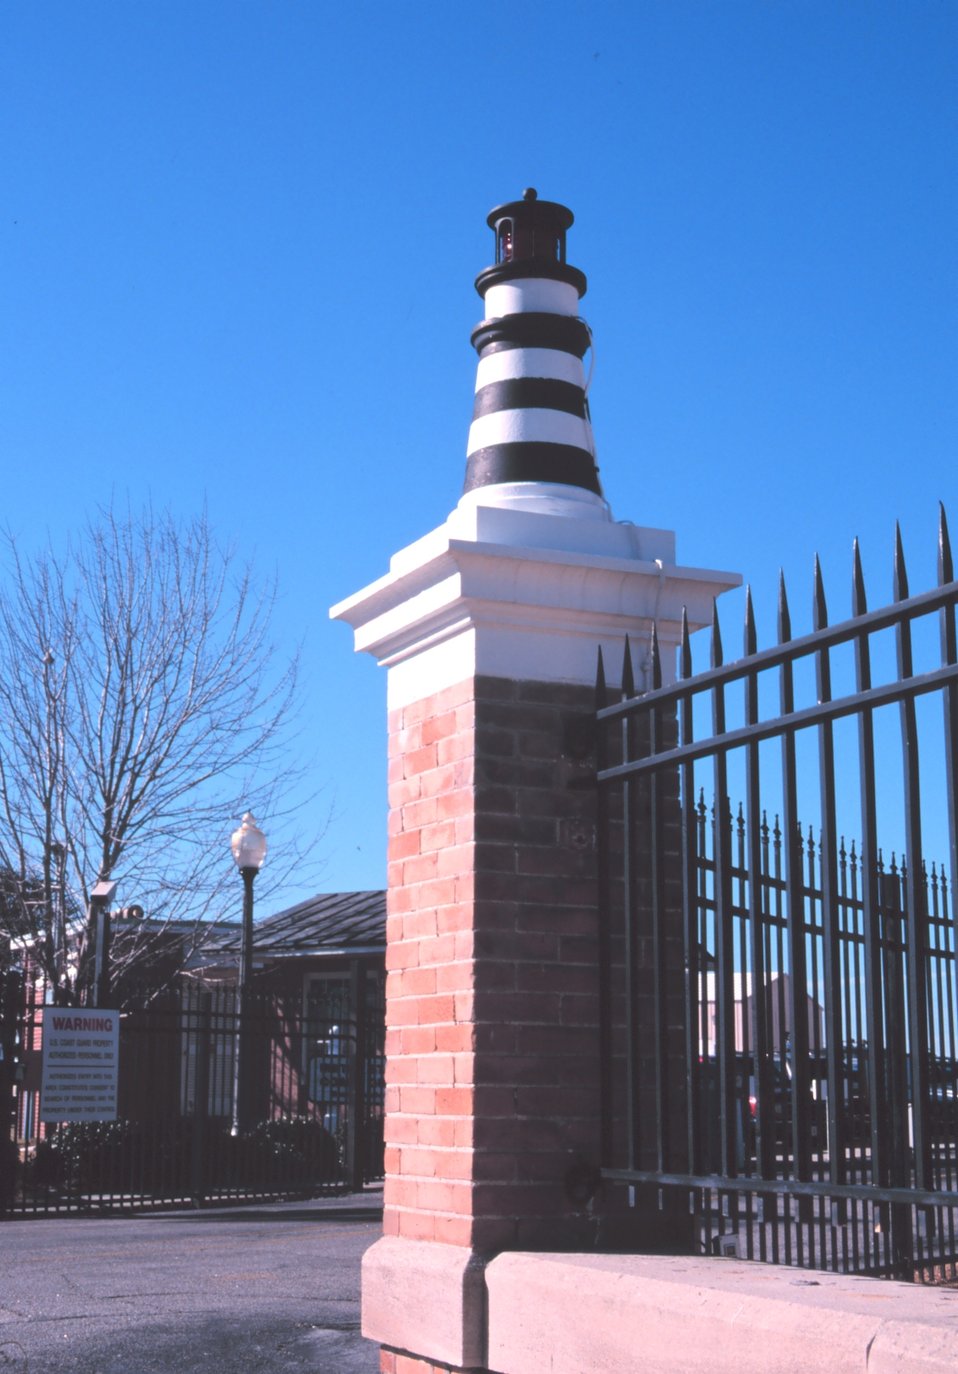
A decorative lighthouse graces the entrance to the United States Coast Guard Base at Charleston.